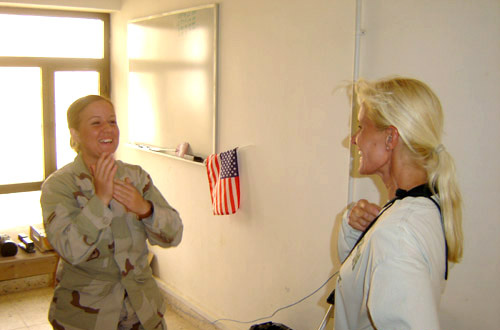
Airmen gets visit from contractor mom in Iraq

ALI BASE, Iraq -- Airman 1st Class Catherine Dilena gets an unexpected visit here from her mother, Sheri Dilena on July 27. Airman Dilena is a client support administrator with the 407th Expeditionary Civil Engineer Squadron here and is deployed from Scott Air Force Base, Ill. Ms. Dilena is a morale, welfare and recreation coordinator at a nearby forward-deployed location.